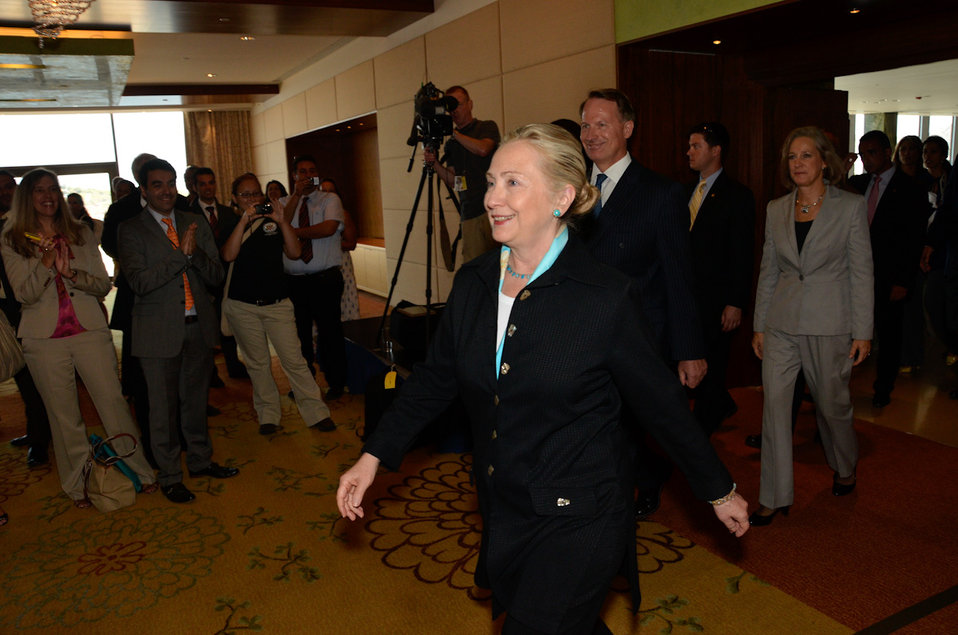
Secretary Clinton Prepares To Speak With Embassy Athens Staff and Families

U.S. Secretary of State Hillary Rodham Clinton walks into the room to speak with Embassy Athens staff and families in Athens, Greece, on July 18, 2011.